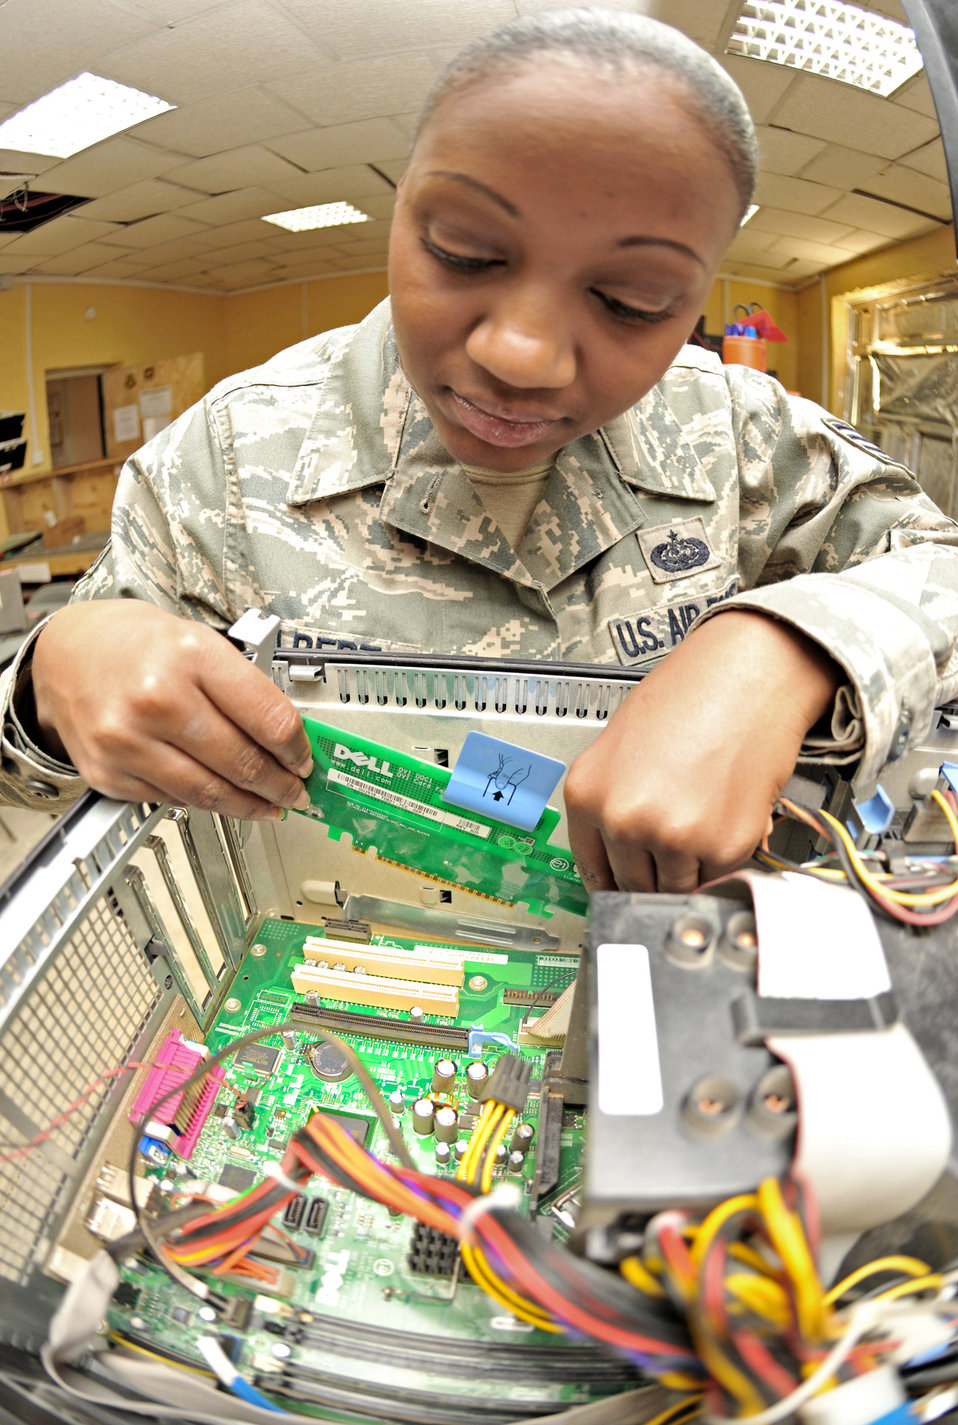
COB Speicher

Staff Sgt. Gissell Gilbert pulls a video card from a desktop unit Jan. 24, 2011, on Contingency Operating Base Speicher, Iraq. Sergeant Gilbert is the automated-data-processing and equipment NCO in charge for COB Speicher's direct-support-signal team.